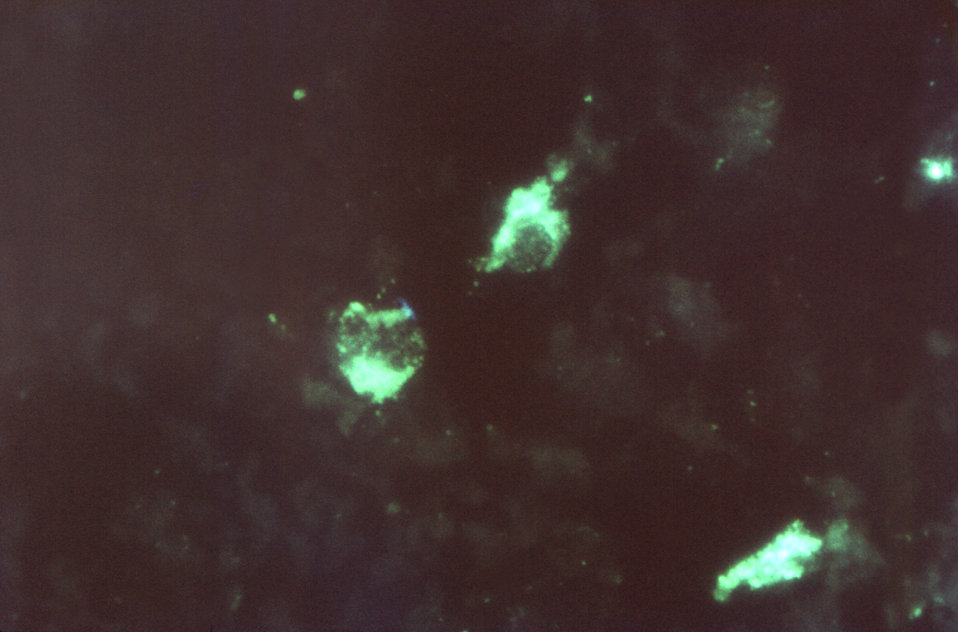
Magnified 400X, this direct FA stained mouse brain impression smear reveals the presence of the bacterium Chlamydophila psittaci, formerly Chlamydia psittaci, in a case of psittacosis.